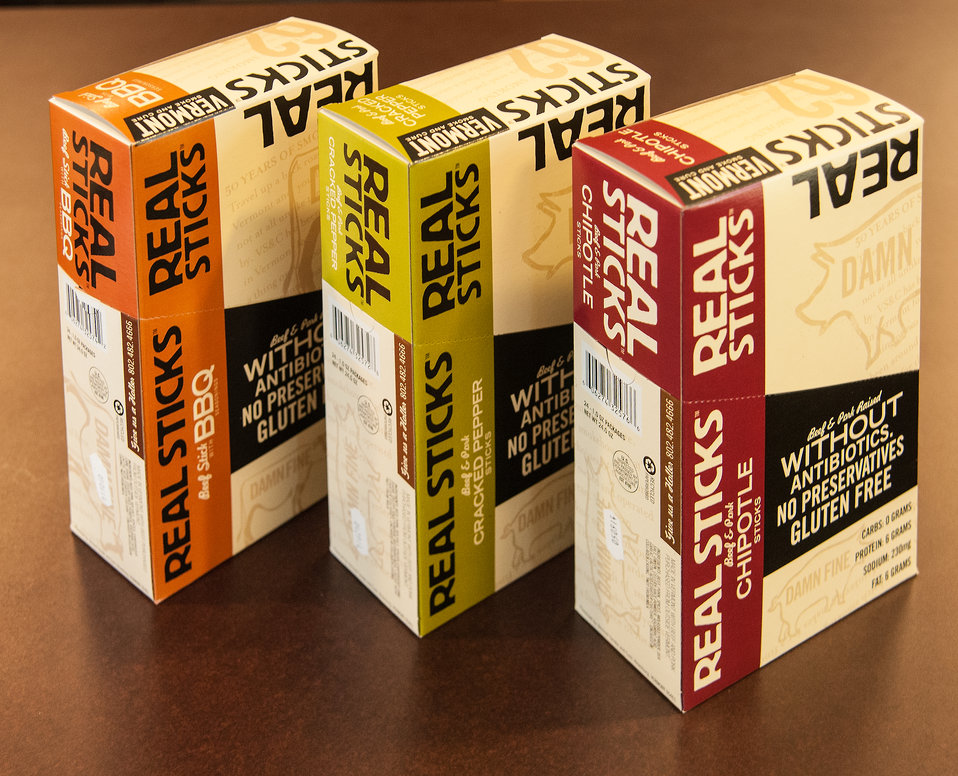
Vermont Smoke and Cure in Hinesburg, VT produces smoked and salt cured beef and pork products from local farms. Vermont Smoke and Cure received a U.S. Department of Agriculture (USDA) Rural Development (RD) Business and Industry Loan program and a Value Added Producer Grant. The loan and grant provided the capital resources necessary for business growth and job creation on Sep. 18, 2013.